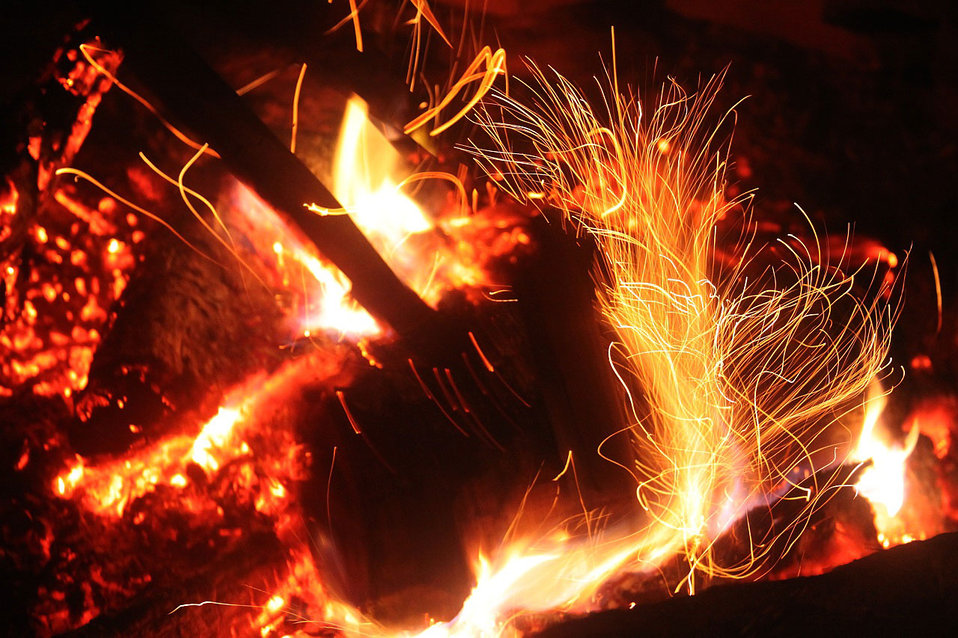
Sparks and flames

Light effect created during moving wood in fireplace.